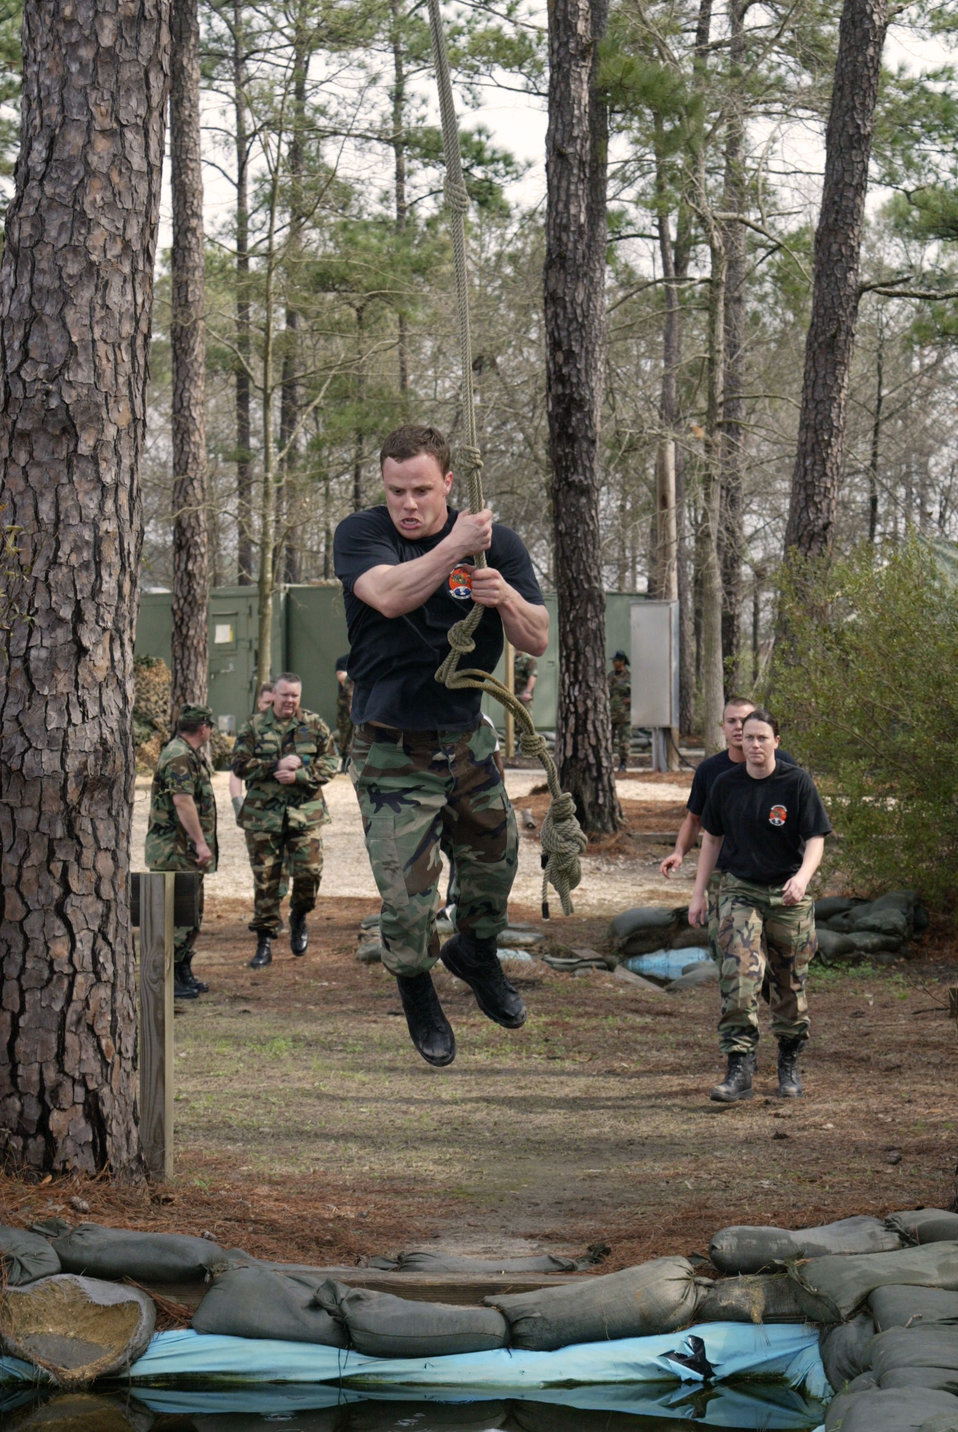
Competition aids Air Force Assistance Fund

POPE AIR FORCE BASE, N.C. -- Staff Sgt. John Phillips swings across an obstacle during an Air Force Assistance Fund competition here April 1. The competition, which raised $520 for the fund, included 26 teams from around the base. Sergeant Phillips was part of the 3rd Aerial Port Squadron team, which finished the course in 6 minutes, 50 seconds.